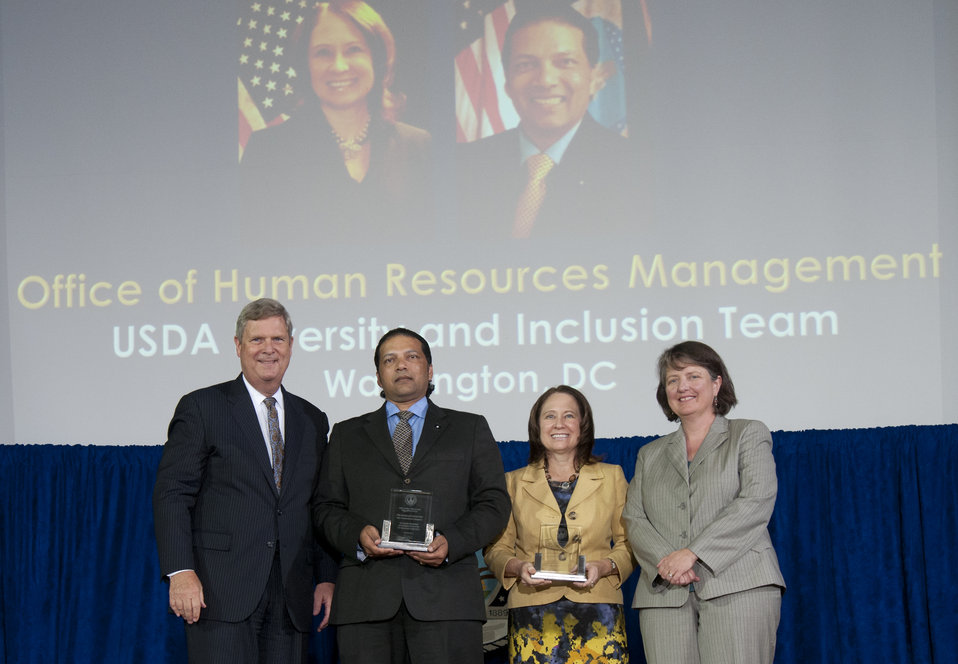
Agriculture Secretary Tom Vilsack and Agriculture Deputy Secretary Kathleen Merrigan present the Secretary’s Honor Award to the USDA Diversity and Inclusion Team Office of Human Resources Management (OHRM) group leaders, Dr. Karlease Kelly and Monshi Ramdass at the U.S. Department of Agriculture (USDA) 64th Annual Honor Awards Ceremony in Washington, D.C. on Wednesday, Sept. 12, 2012. The USDA Diversity and Inclusion Team provided exceptional leadership, innovation, resourcefulness, and strategic direction in building partnerships and recruiting a diverse and talented workforce to transform USDA into a model work place.